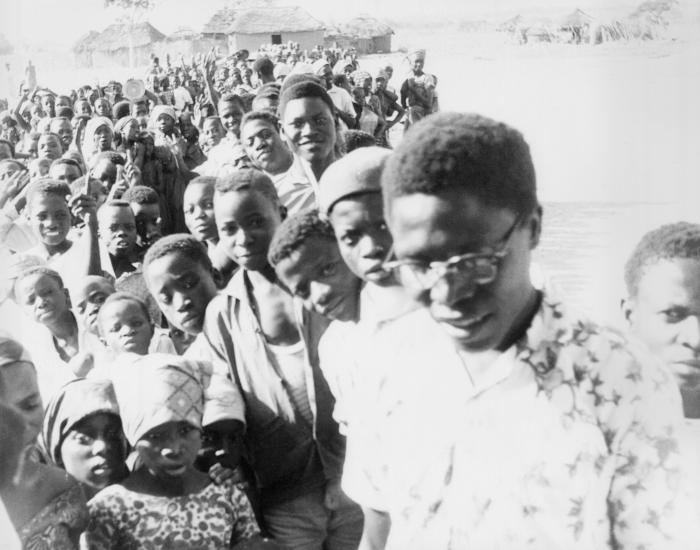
This 1968 image depicted a long line of Cameroon village inhabitants waiting to receive their measles and smallpox vaccinations.